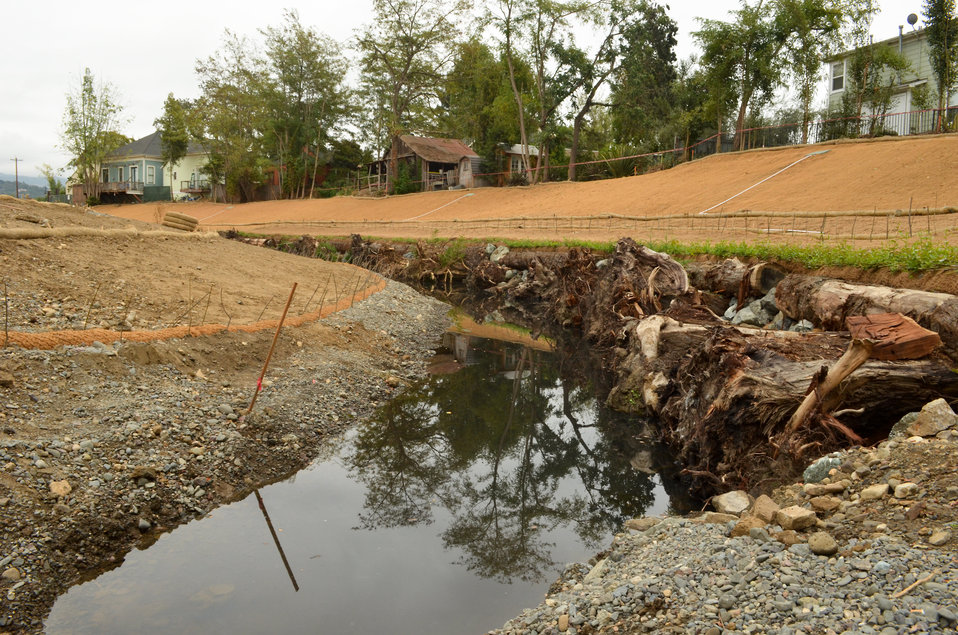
Tree trunks for fish habitat in Napa Creek

Tree trunks placed in the new, widened channel of Napa Creek in Napa, Calif., shown Oct. 12, 2012, will provide habitat for fish and other aquatic life when the creek is full. The project – which also includes replacing a low bridge and installing underground water tunnels – offers flood water an easier path from the creek to Napa River, instead of overflowing and flooding nearby homes and businesses as it does on average every three to five years. A joint effort between the U.S. Army Corps of Engineers, the city of Napa and the Napa County Flood Control and Water Conservation District to reduce the city's flood risk, the $14.8 million Napa Creek project is funded by the American Recovery and Reinvestment Act of 2009.